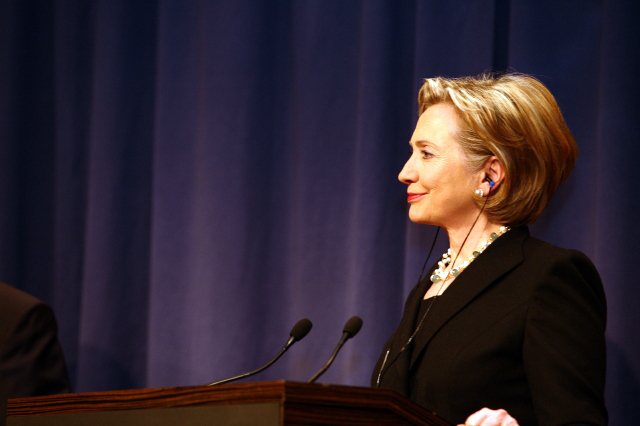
Press Conference With Russian Foreign Minister

Press conference after dinner meeting between U.S. Secretary of State Hillary Rodham Clinton and Russian Foreign Minister Sergey Lavrov in Geneva, Switzerland March 6, 2009.